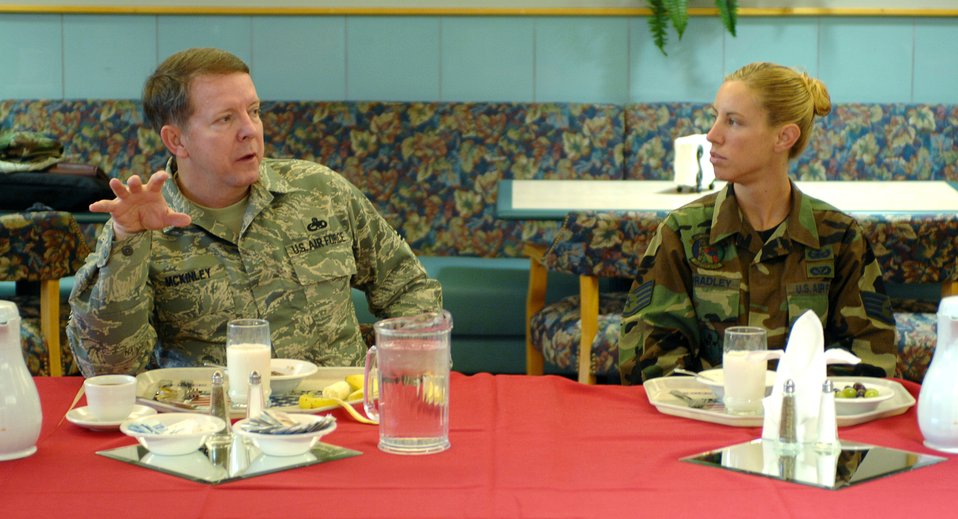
Air Force Week

Staff Sgt. Elizabeth Spradley listens as Chief Master Sgt. of the Air Force Rodney J. McKinley meets with Luke Air Force Base, Ariz., Airmen during breakfast. The chief visited during Air Force Week, a week-long event designed to thank the community for its support and to increase public awareness of the Air Force's mission, capabilities and the professionalism of its Airmen. Sergeant Spradley is assigned to the 56th Civil Engineer Squadron explosive ordnance disposal flight.